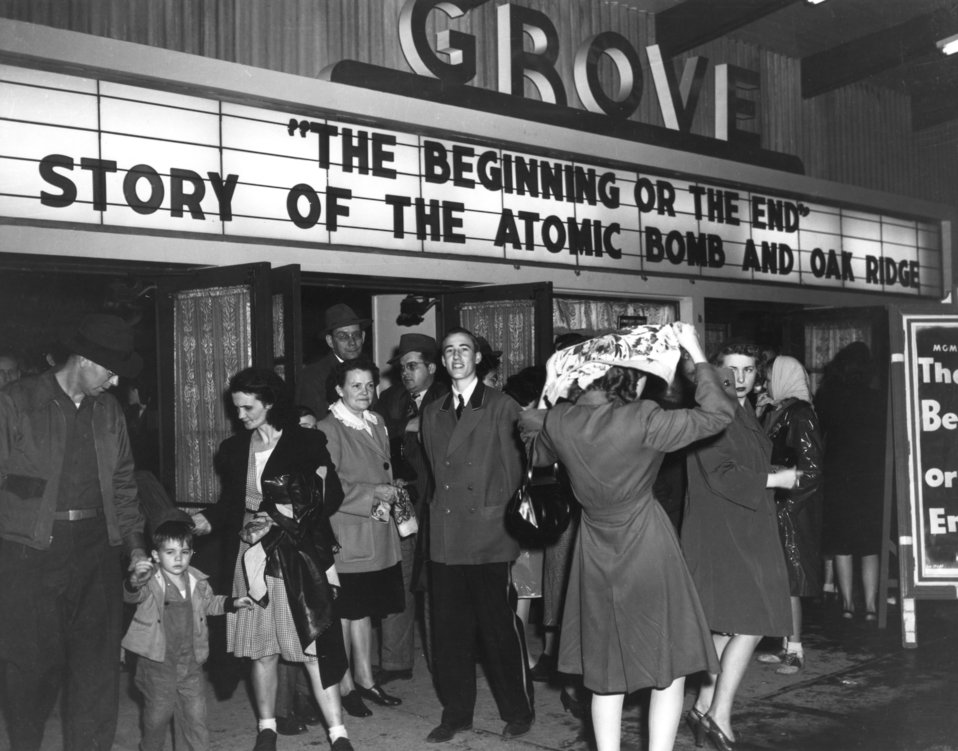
Business activity at Oak Ridge